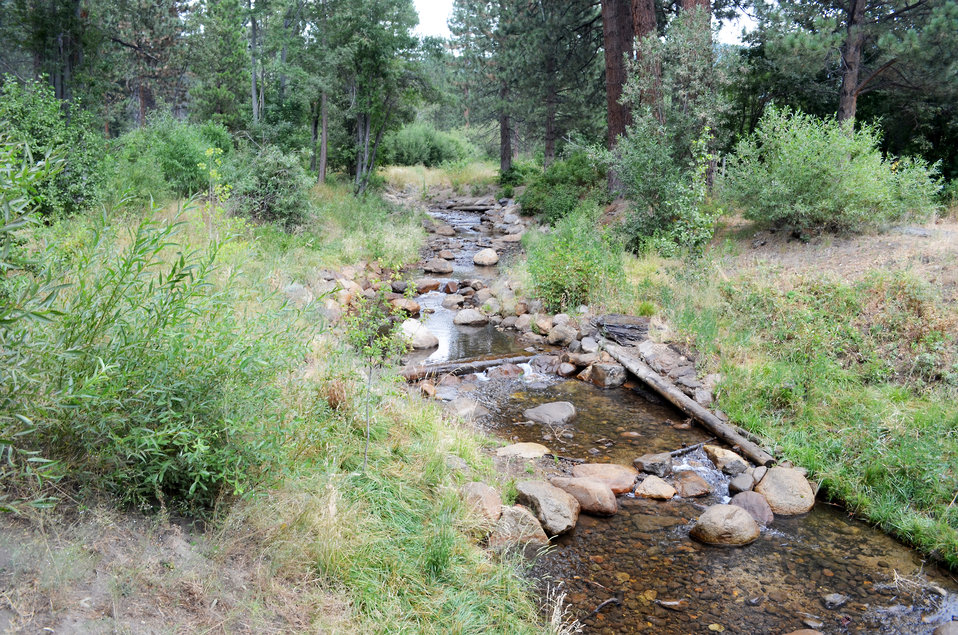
Environmental restoration

130819-A-QE256-029 – Newly-restored Third Creek flows near Incline Village, Nev., Aug. 19, 2013. The U.S. Army Corps of Engineers Sacramento District and the Incline Village General Improvement District recently completed an ecosystem restoration project along Incline Creek and Third Creek. Both creeks have been a large source of sediment for nearby Lake Tahoe, reducing its prized clarity. The restoration project returned the creeks to a more natural state, reducing their sediment discharge into the lake. Newly planted vegetation along the creek bank helps control erosion, a major source of sediment discharge.